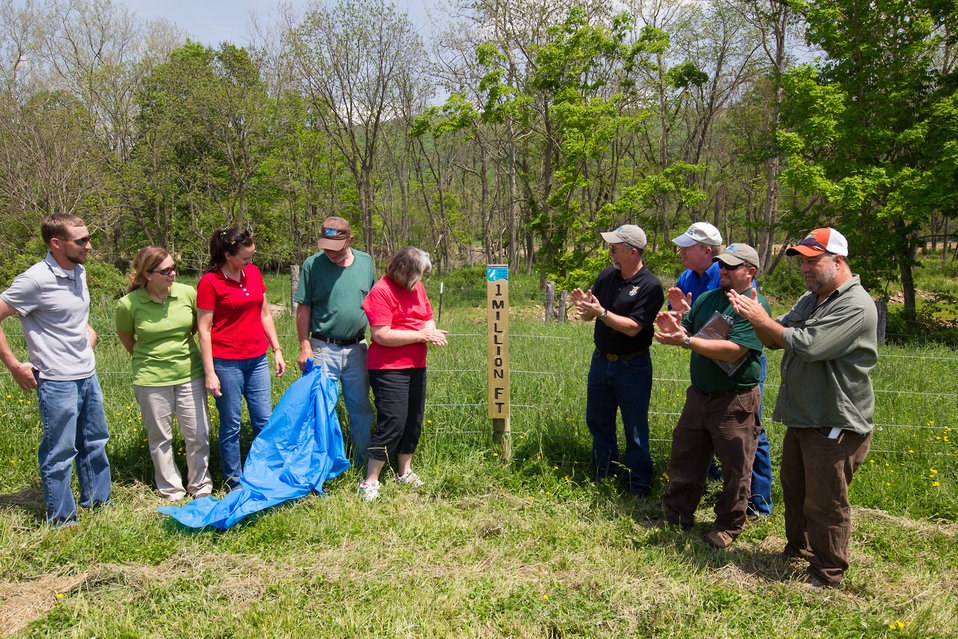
Celebrating 1 Million Feet of Conservation Fence in WV

Partners for Fish and Wildlife Program